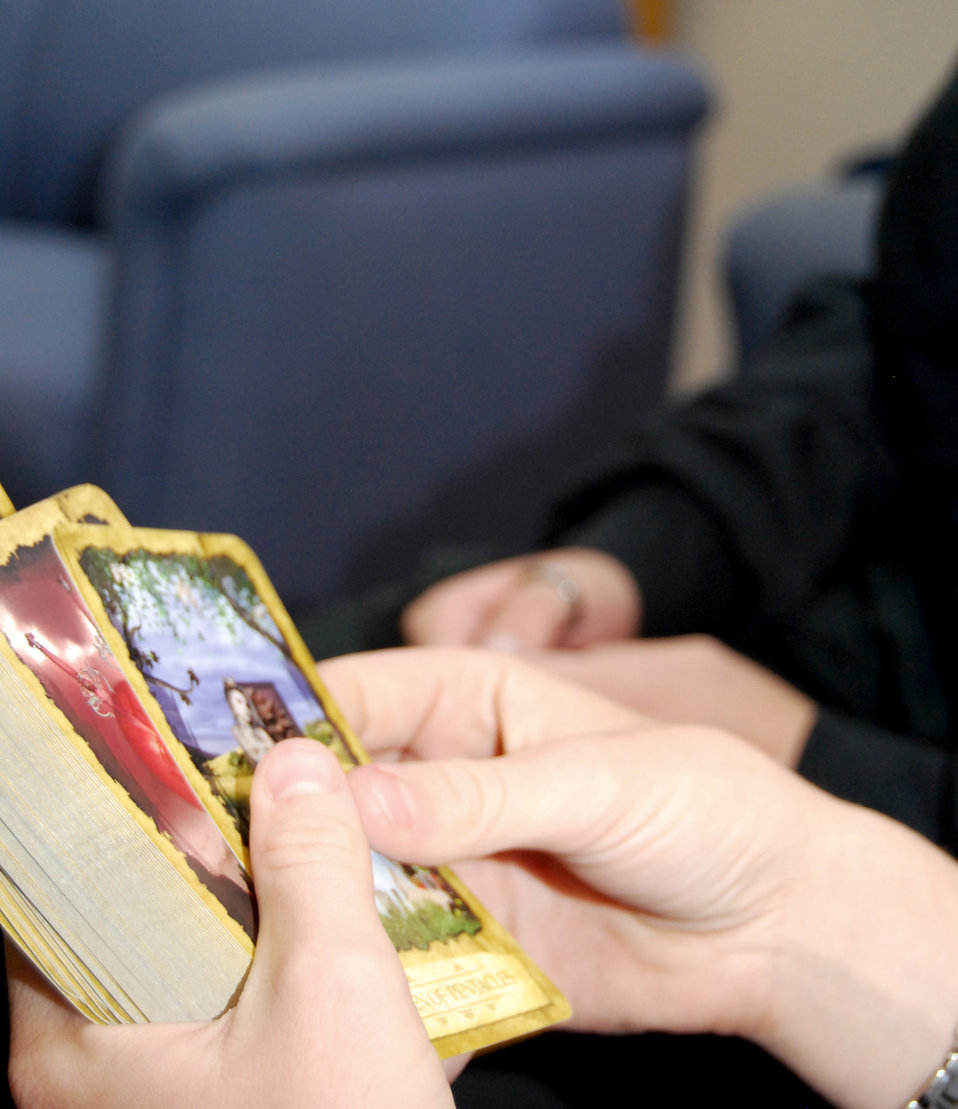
Freethinkers, Pagans discuss intersections of mind, spirit

A cadet looks at a tarot deck during the Special Program in Religious Education group meeting Oct. 18, 2010, at the Air Force Academy. Some Pagans use tarot cards to get an intuitive point of view of their own or someone else's current emotional or spiritual situation.